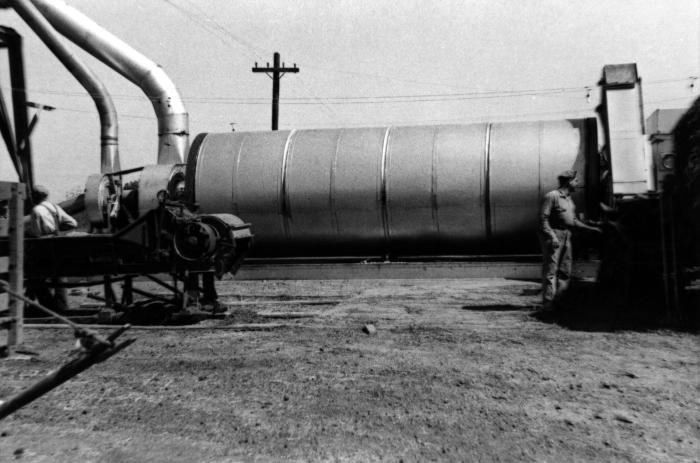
This 1947 historical photograph was provided by the Center for Disease Control's (CDC), National Institute for Occupational Safety and Health (NIOSH), and depicted two men operating agricultural drying machinery with ductwork, in order to process agricultural products on a Kansas farm. This image was part of a collection that was used to document the many aspects of various industrial activities, so as to better understand these workplace environments, and their associated hazards. In gaining a better understanding of workplace hazards, protocol-formulating bodies such as NIOSH, are better able to create a safer workplace through substantiation of appropriate safety regulations.